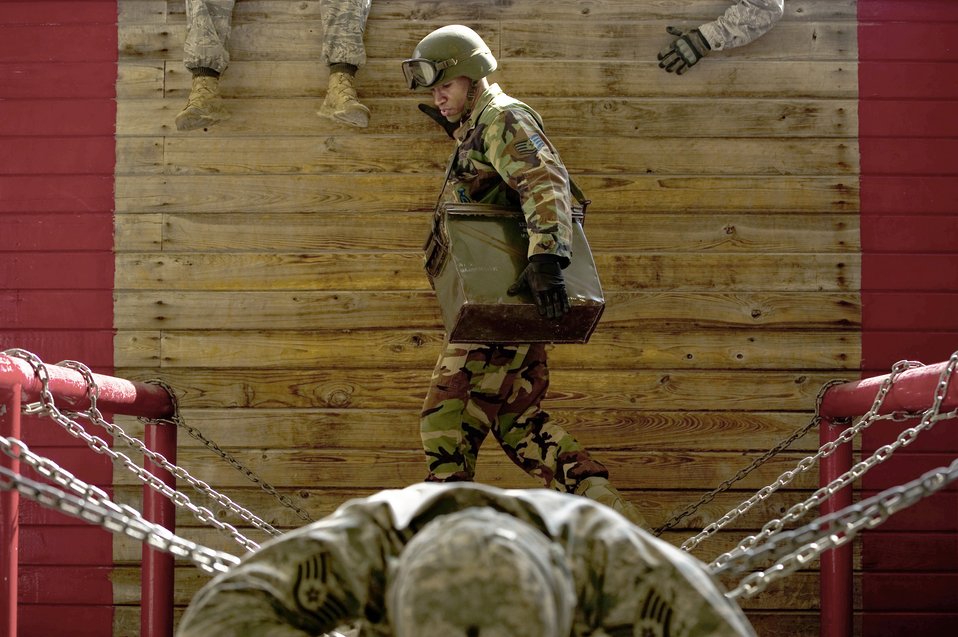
Combat Leadership Course

Staff Sgt. Jamion Speed carefully makes his way through an obstacle Oct. 22, 2010, at Camp Bullis, Texas, during the Combat Leadership Course. Security forces Airmen use teamwork to complete various obstacles.